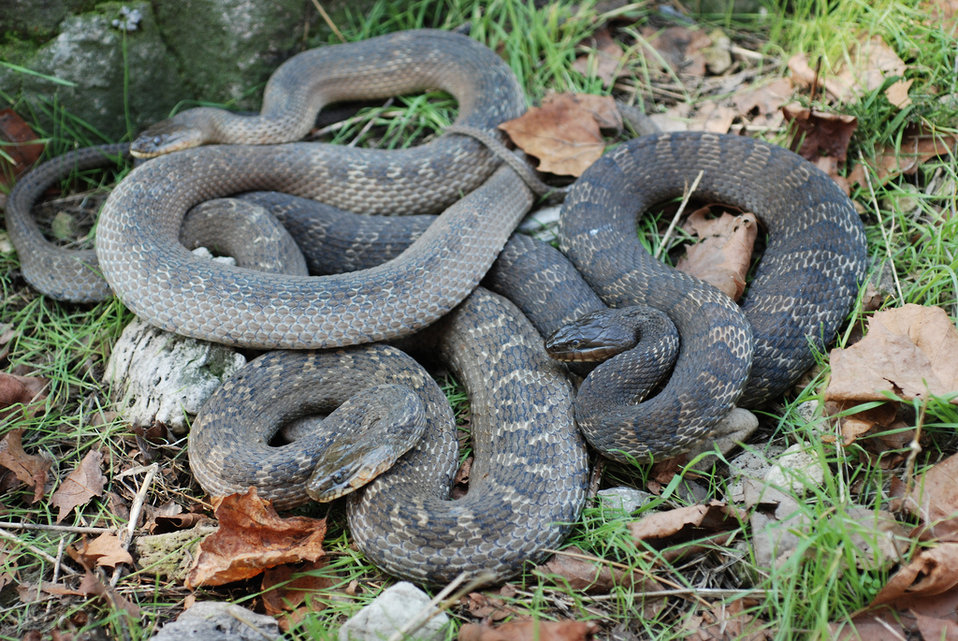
Recovered Lake Erie watersnake (Nerodia sipedon insularum)